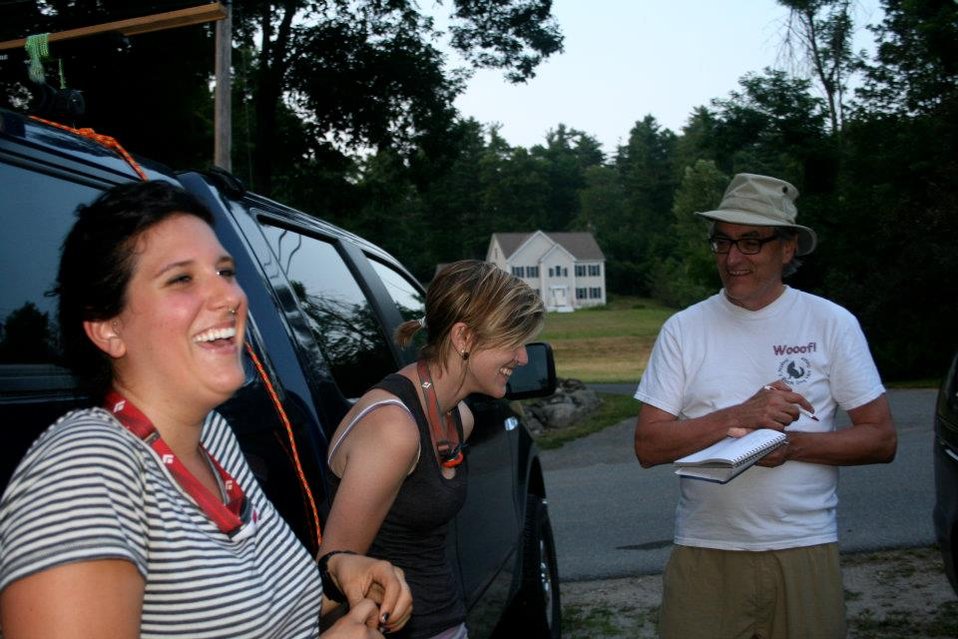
NYT science writer Jim Gorman talks with BU technicians